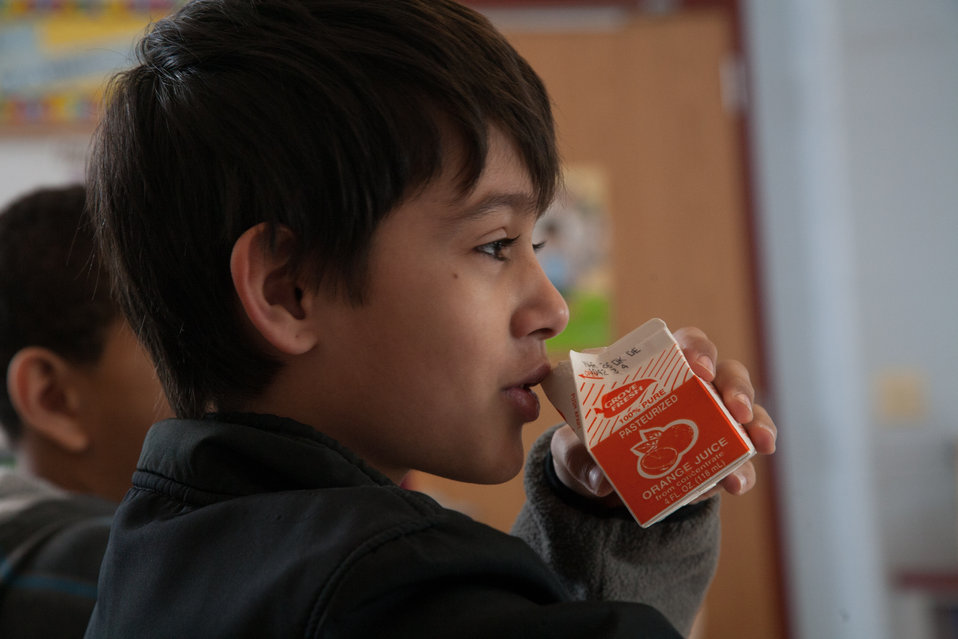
A Harmony Hills Elementary School student enjoys his morning orange juice in Silver Spring, MD, on Friday, March 8, 2013. Today is the inaugural International School Meals Day and Mr. Damien Grasso's 5th grade class, was paired with Mrs. Karen McAllister’s class at Dalry Primary School in North Ayrshire, United Kingdom using a real-time online video connection; the children are able to share some of the healthy eating and physical activity choices available to them. USDA's Food and Nutrition Service (FNS) administers several programs that provide healthy food to children including the National School Lunch Program, the School Breakfast Program, the Child and Adult Care Food Program, the Summer Food Service Program, the Fresh Fruit and Vegetable Program, and the Special Milk Program. Administered by State agencies, each of these programs helps fight hunger and obesity by reimbursing organizations such as schools, childcare centers, and after-school programs providing healthy meals to children. Harmony Hills participates in the Maryland Meals for Achievement (MMFA), In-Classroom breakfast program, the fresh fruit and vegetable program, and the summer food service program. Learn more by visiting www.fns.usda.gov and twitter @USDANutrition.